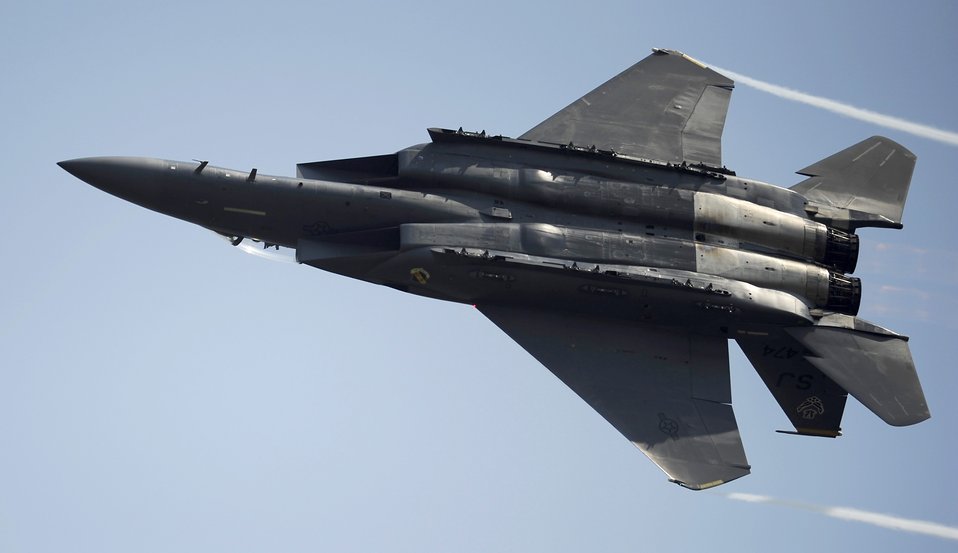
F-15E at Air Expo

An F-15E Strike Eagle pilot demonstrates the aircraft's maneuverability April 9, 2011, during the Charleston Air Expo at Joint Base Charleston S.C. The F-15E is a multirole fighter capable of air-to-surface and air-to-air combat.